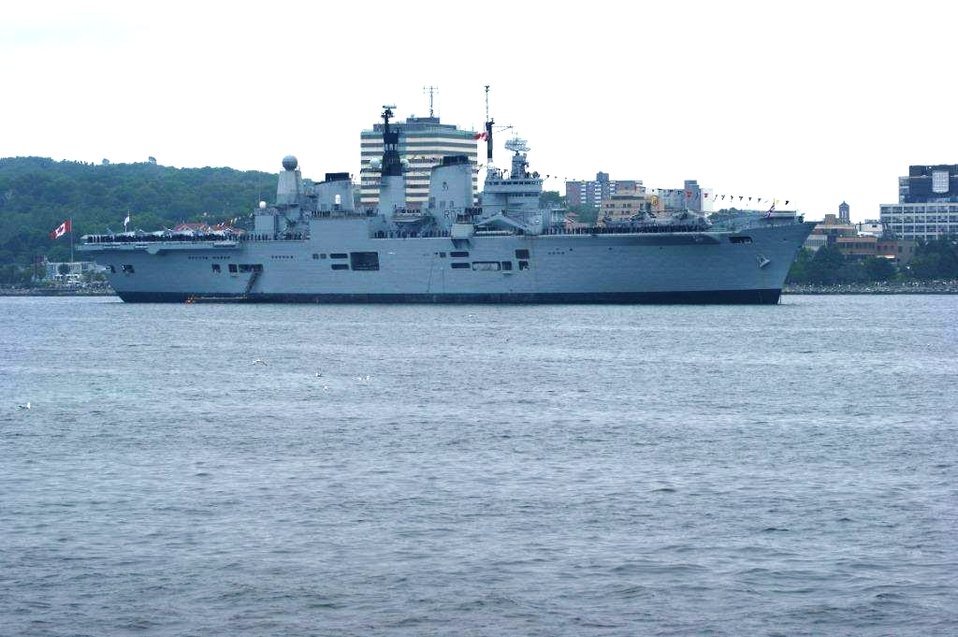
The HMS Arch Royal in the Dartmouth Skyline